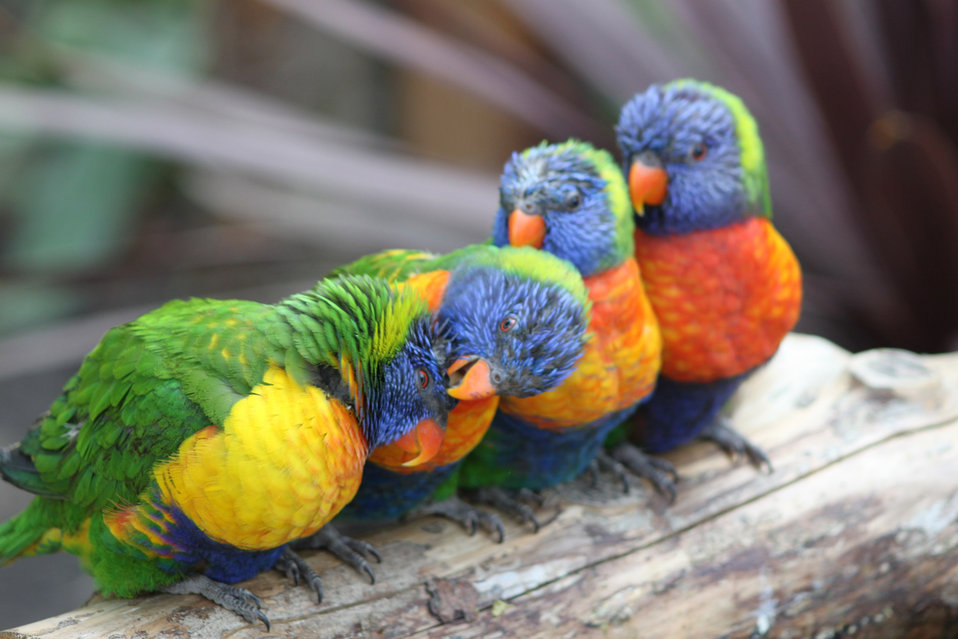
Fun guys

Bright coloured birds.